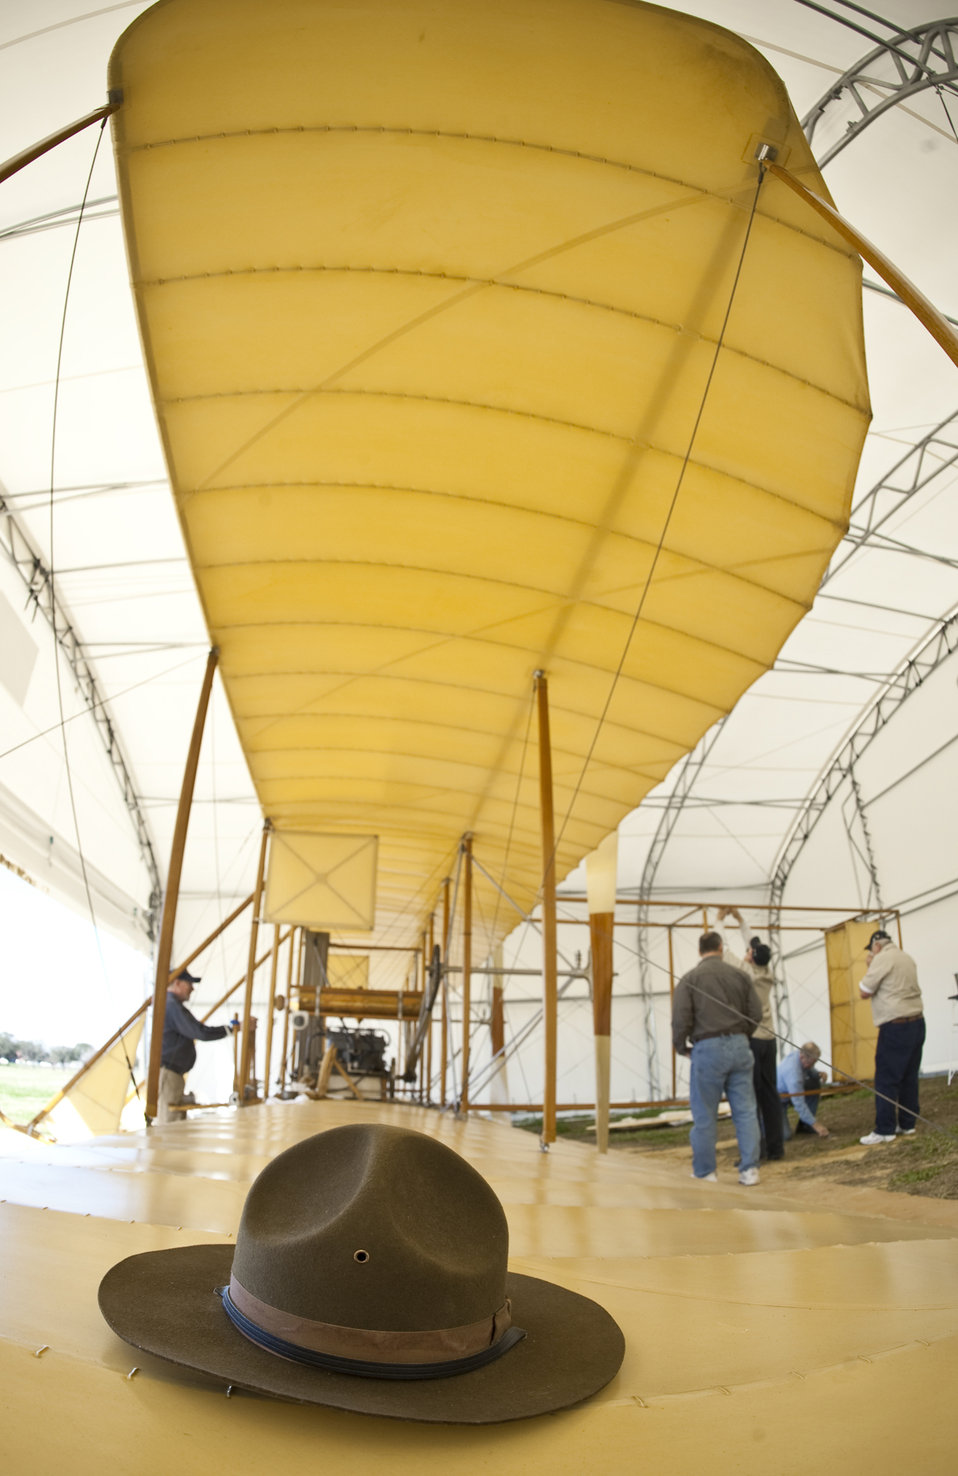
An early Army-style hat lies on the lower wing of a Wright